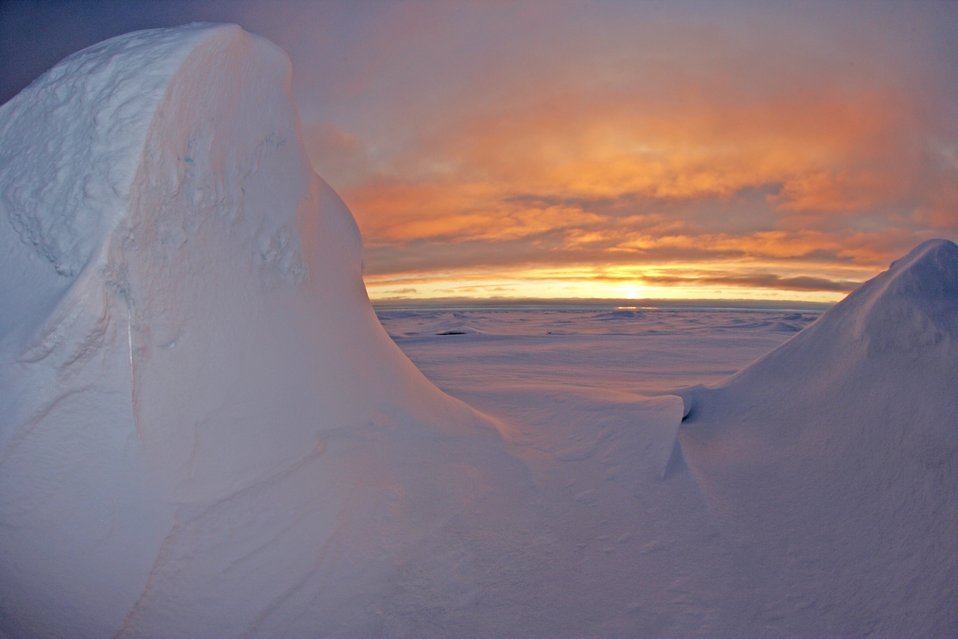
A spectacular Arctic sunset.